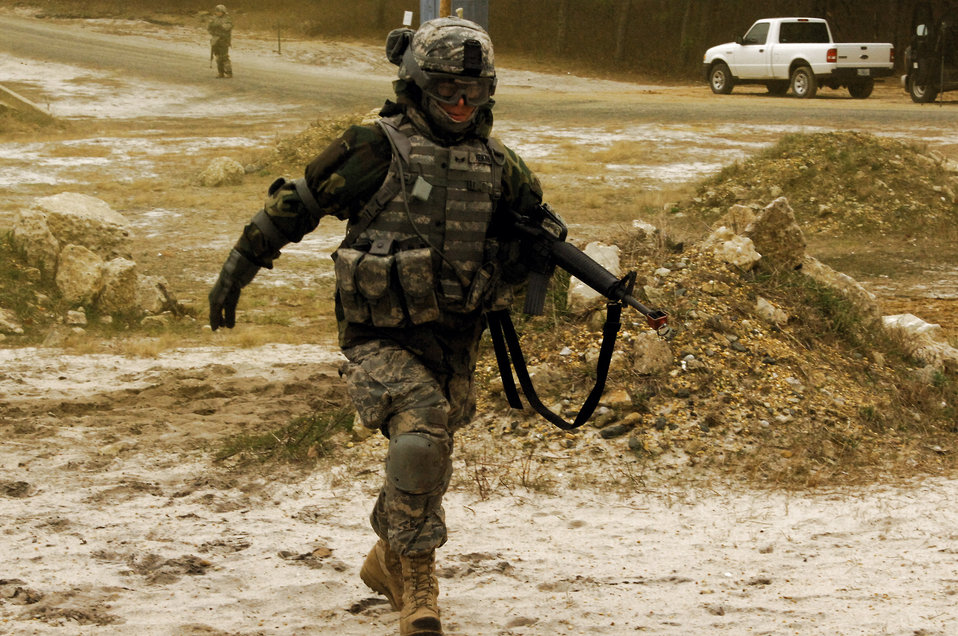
Airmen master Soldier skills training

Senior Airman Elisabeth Remondini runs to the next point during Individual Movement Technique training at the Fort Dix, N.J., improvised explosive device range. The training teaches troops how to conduct maneuvers in an unknown, often hostile, environment. Airman Remondini and her fellow Airmen, members of USAF Class 25, are completing the Soldier Skills Training Course as they prepare for various deployments around the globe. There are about 75 Airmen currently going through the month-long course.